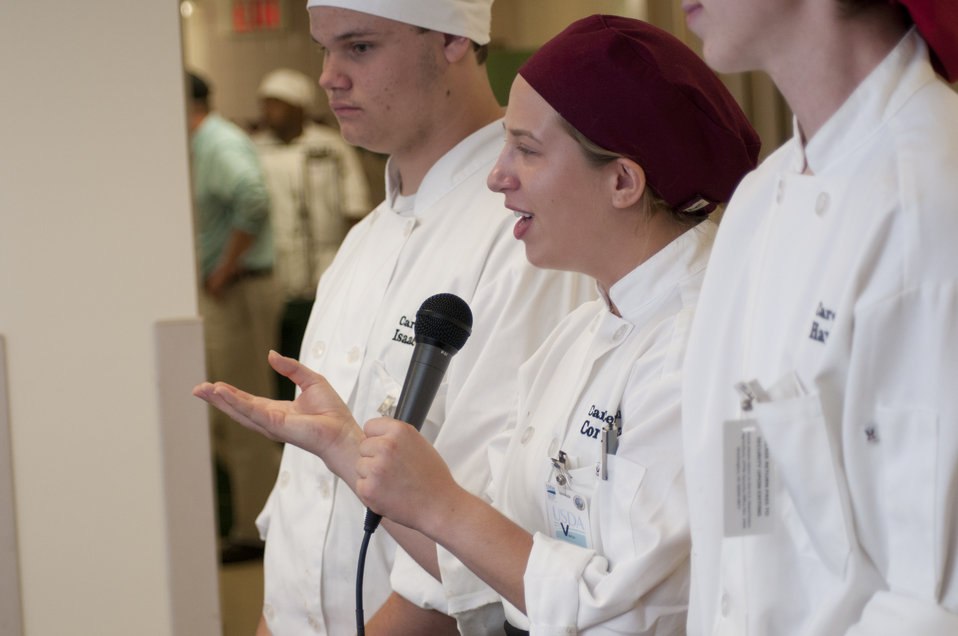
Winston-Salem student chef Corinne Hertz was outspoken during the teams presentation, one of the reason for that team winning 'Outstanding Display' during Cooking Up Change, National Healthy Cooking Competition at the USDA in Washington, DC, on Monday, May 23, 2011.